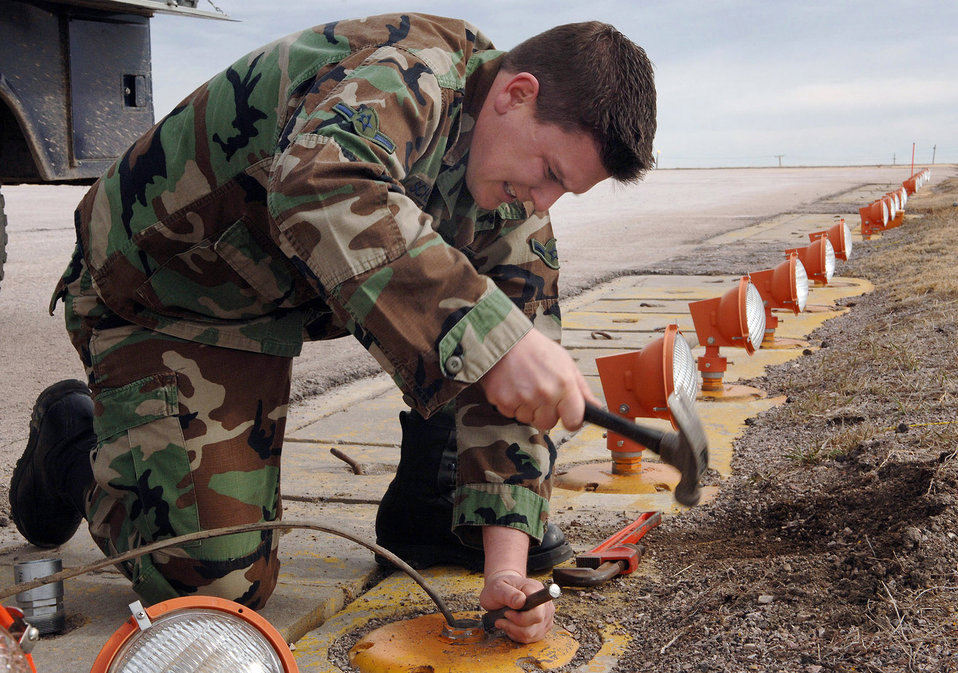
Flightline maintenance

Airman Kody Schlageter fixes a light fixture on the flightline at Ellsworth Air Force Base, S.D., on Wednesday, March 29, 2006. The fixture was broken during the last snow storm. Airman Schlageter is with the 28th Civil Engineer Squadron.